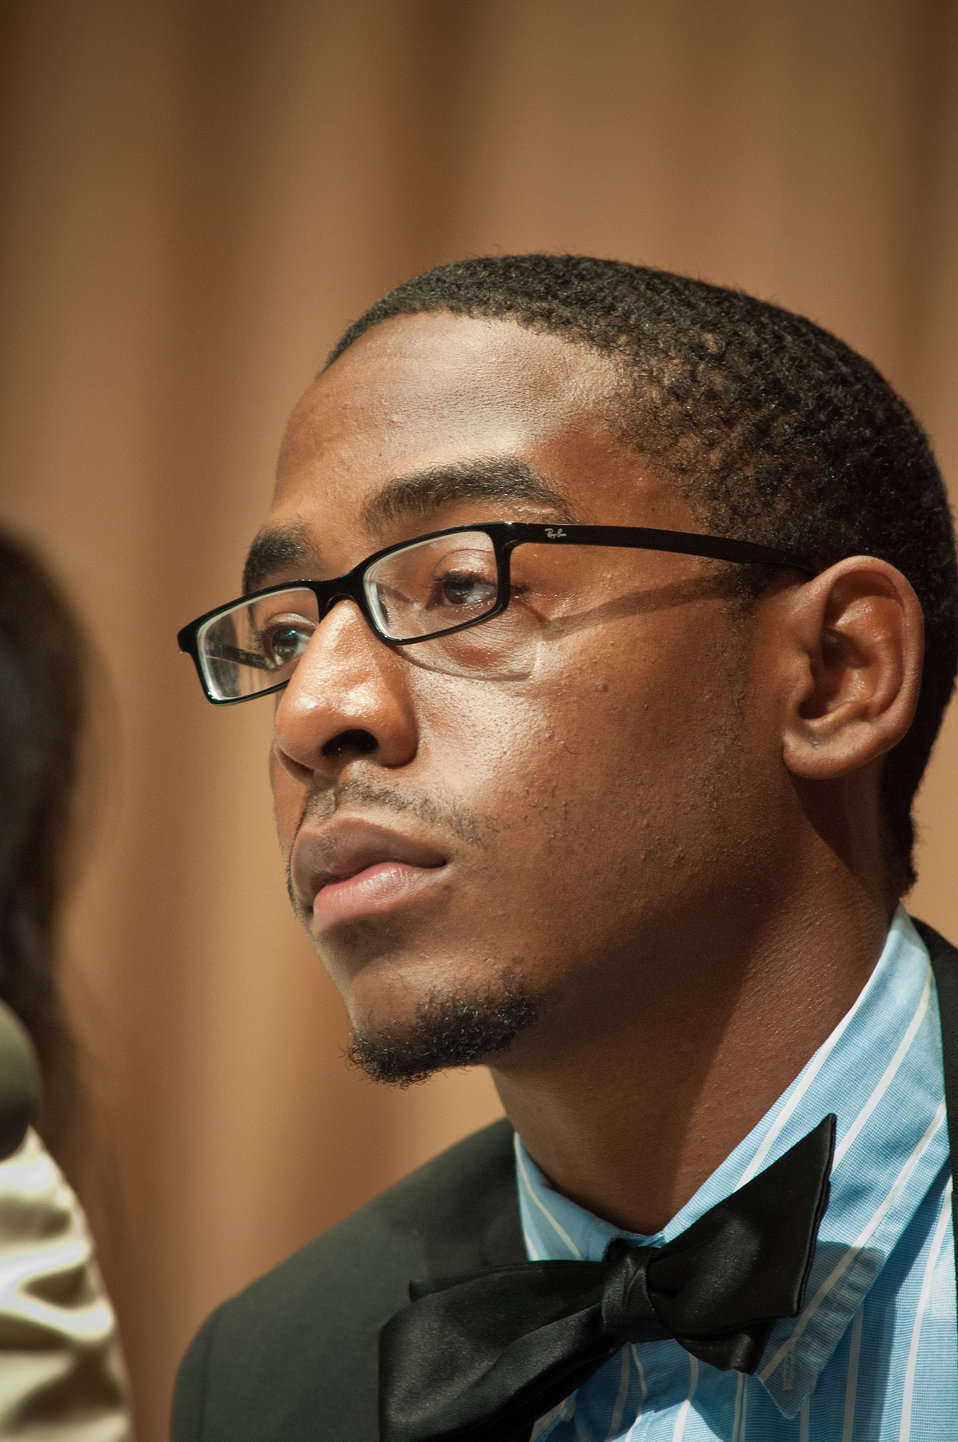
Brendon Gregorie, Agricultural Research Service (ARS) intern and panel listens to questions from the audience at the United States Department of Agriculture (USDA) Intern Day and Panel Discussion, Transforming USDA’S Tomorrow Today” in Washington, D.C., on Wednesday, July 11, 2012.